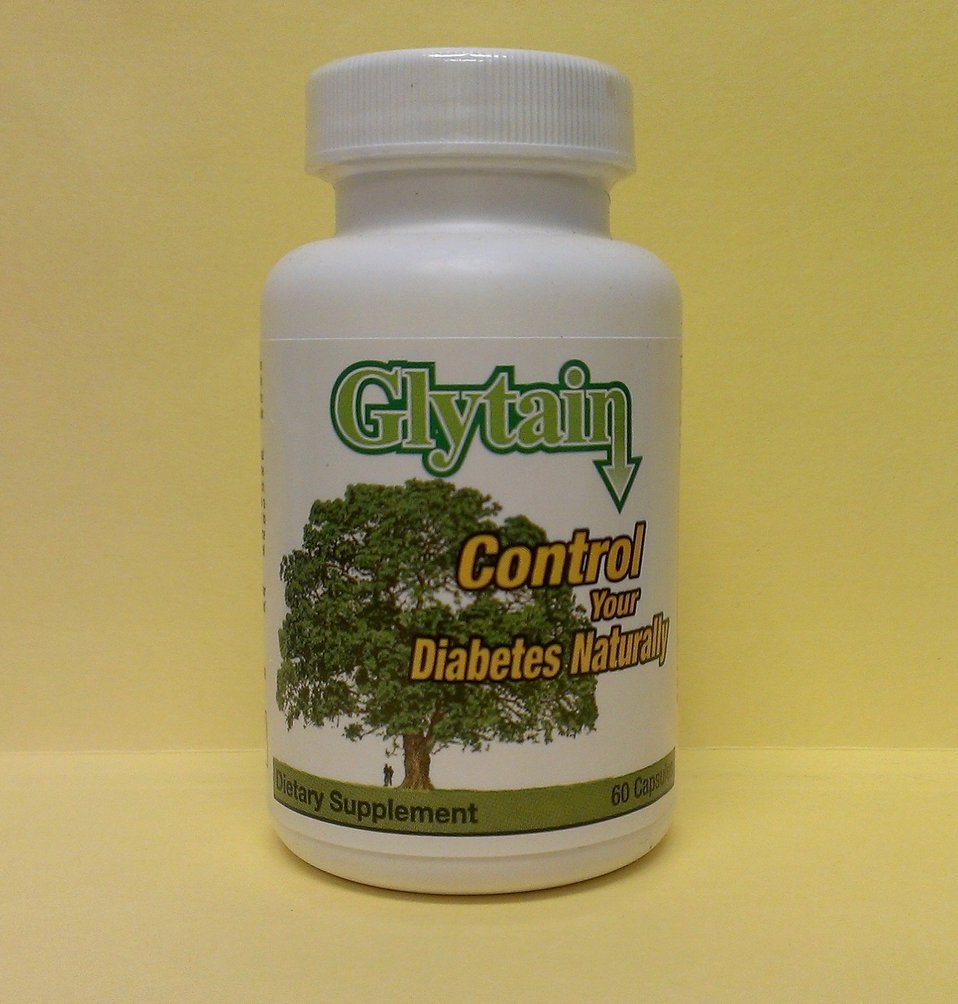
Illegally Sold Diabetes Treatments - Glytain

This product is promoted with unapproved claims to prevent or treat diabetes and/or its complications. FDA warns consumers to avoid unproven and potentially unsafe products sold as treatments for diabetes.